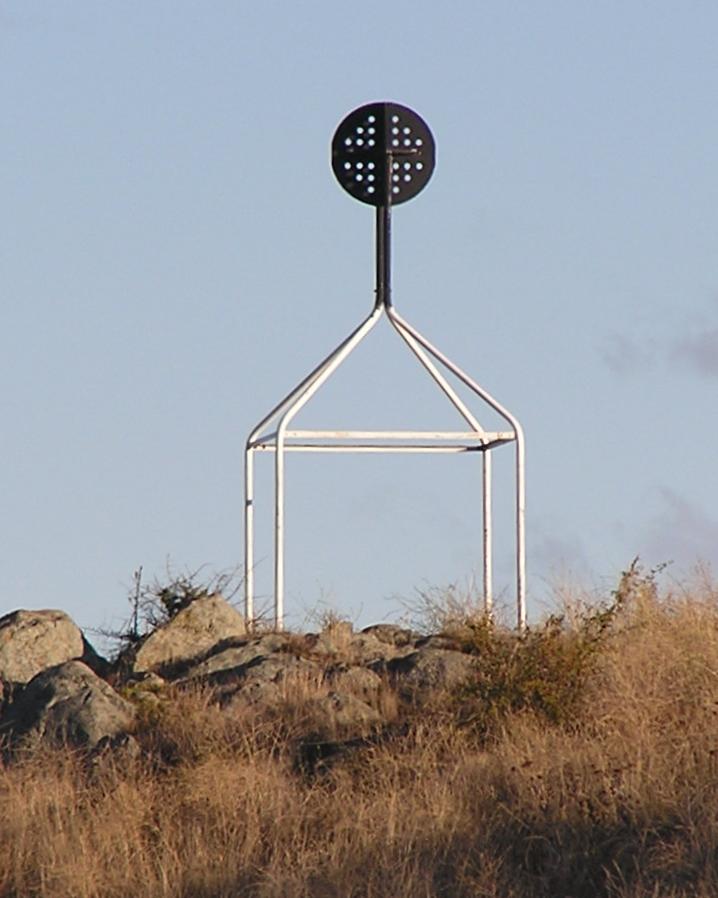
Davidson en:Trig point on en:Red Hill, Australian Capital Territory. From ACT Govt info on Survey Control Marks - In the ACT trig stations consist of a ground mark with a white quadripod supporting a black disc above the ground mark. Most of these Trig Stations are part of the ACT Precision Zone: a national geodetic survey and adjustment carried out in the early 1970s. The ACT Precision Zone and its associated marks have been the primary control for all new development in the ACT since the early 1970s. The accuracy of ACT Precision Zone marks is 1 in 250,000. Further information on Geodetic survey in Australia - now and history.